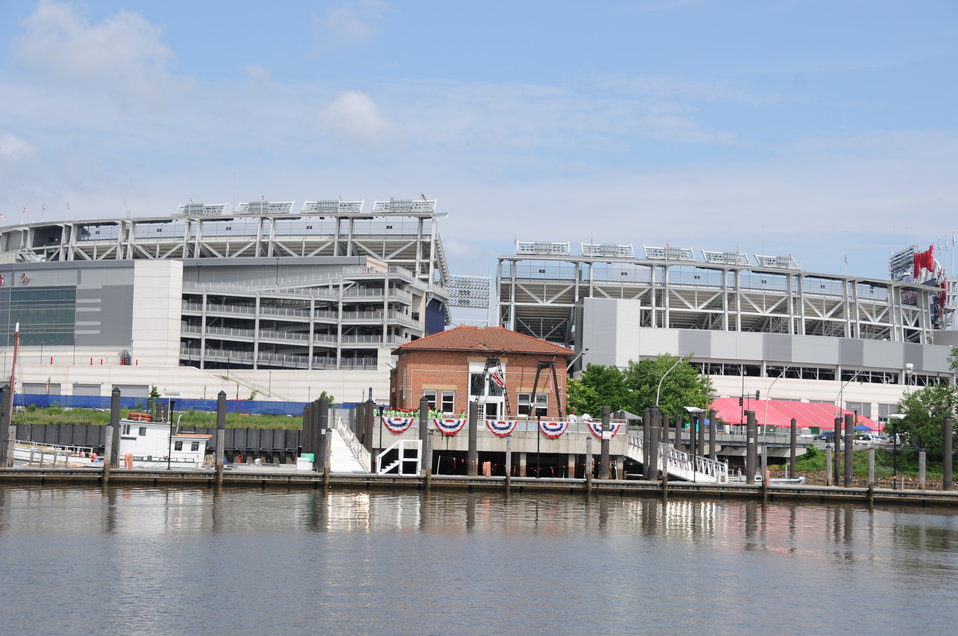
2013 National Fishing and Boating Week

Local students prepare to enjoy fishing at the annual kick-off of National Fishing and Boating Week on the Anacostia River in Washington D.C.